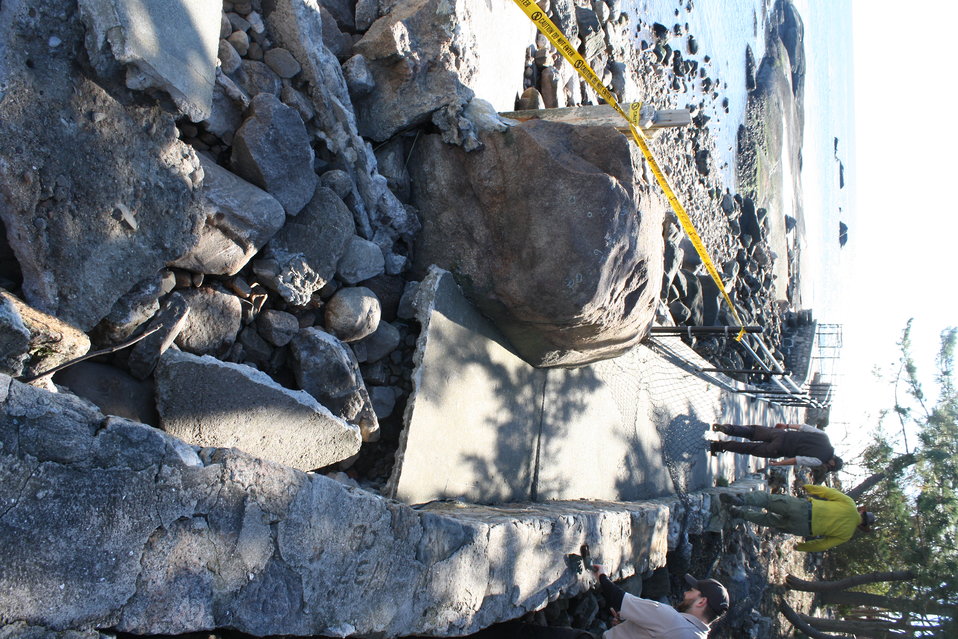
Damage at Stewart B. McKinney National Wildlife Refuge (CT)

A damaged sidewalk on Outer Island.